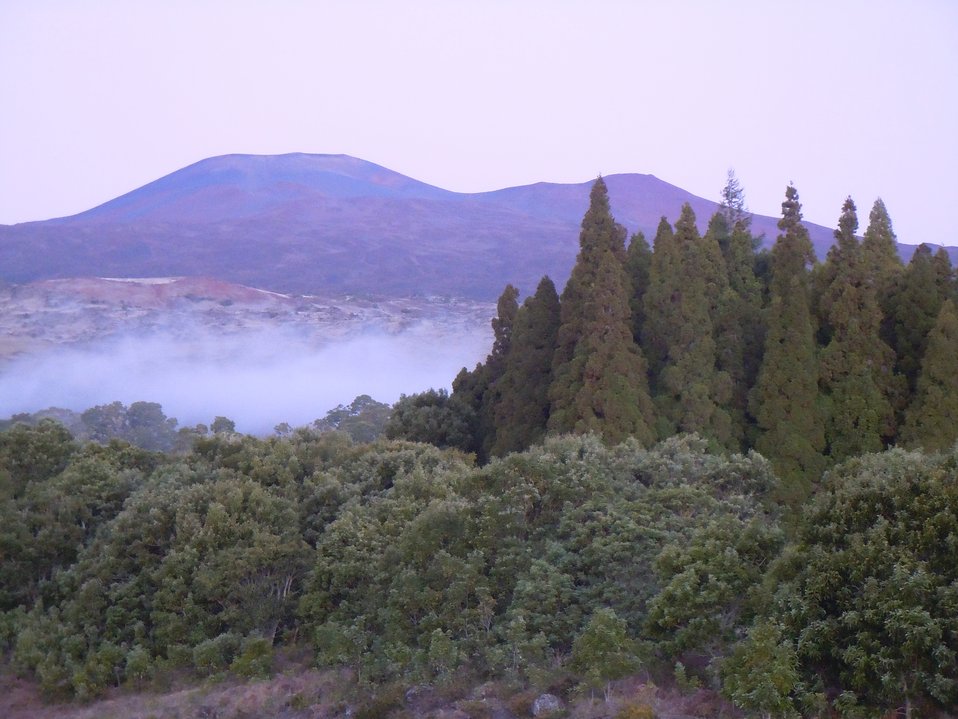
Mauna Kea from Hakalau

Hakalau Forest National Wildlife Refuge, HI
March 2012